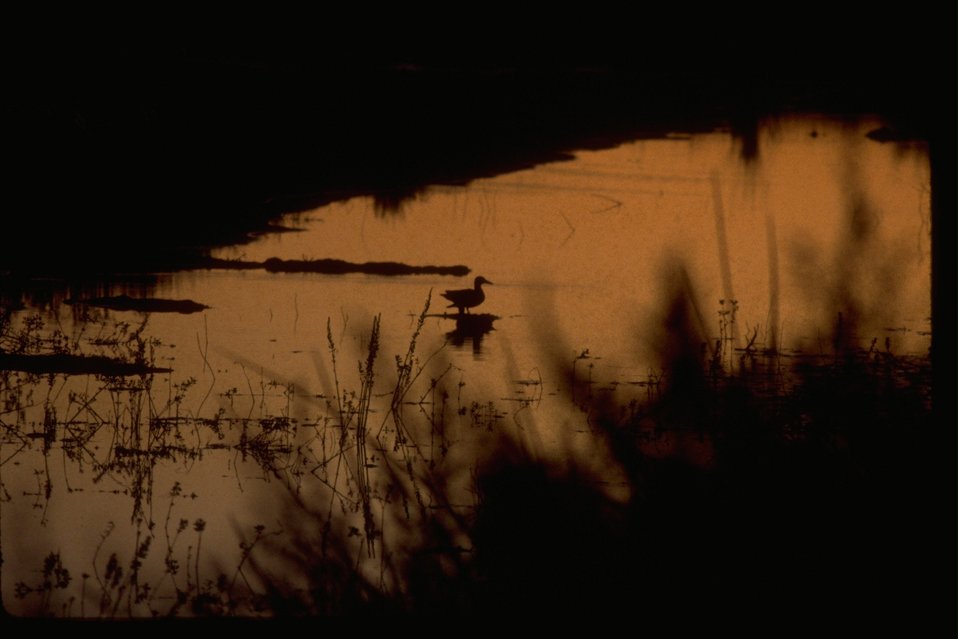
Warner Wetlands at sunset with a bird in the pond.